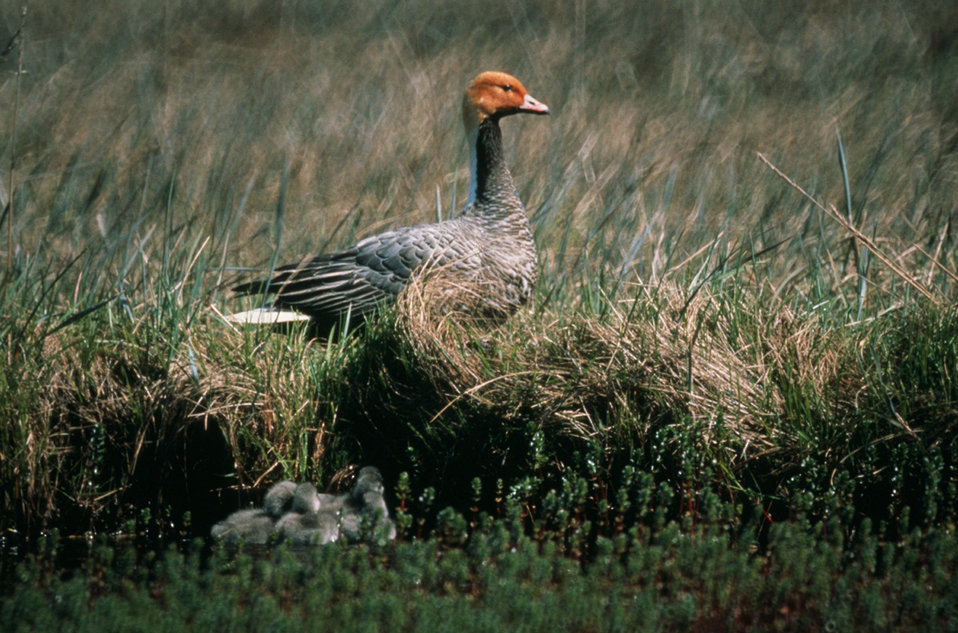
Emperor Goose with Goslings.